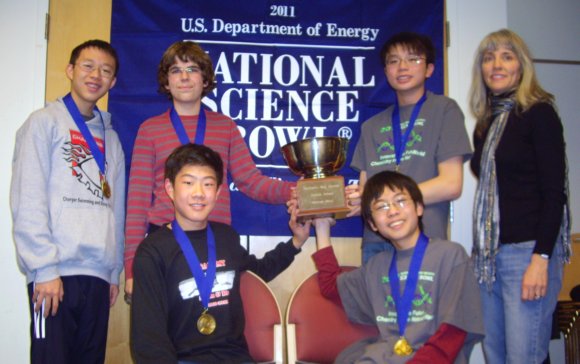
Albuquerque Academy resized

Regional Science Bowl winners: Albuquerque Academy in Albuquerque, NM.